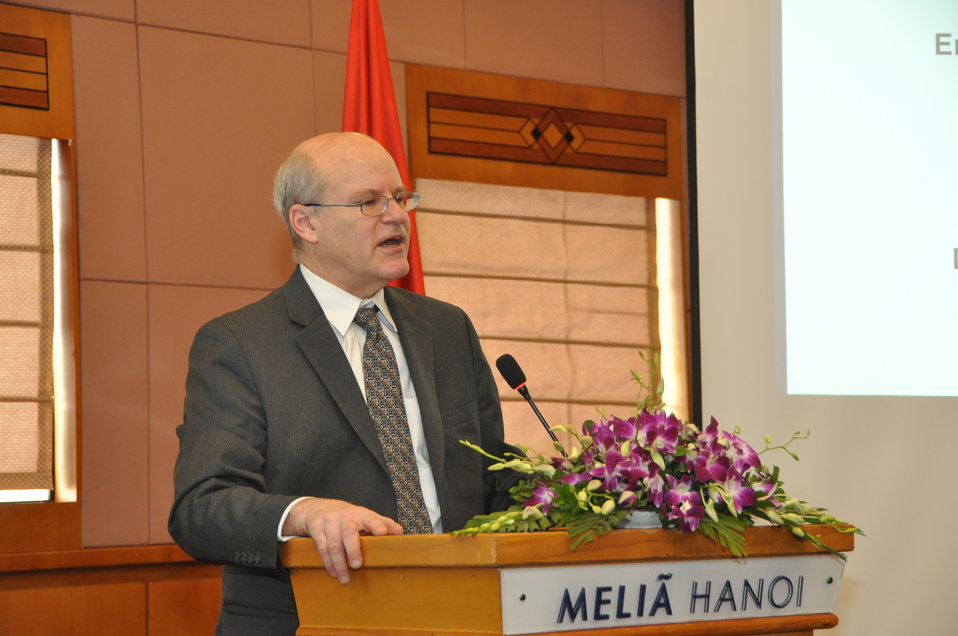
USAID Deputy Administrator Donald Steinberg addresses a workshop on the design for Agent Orange/dioxin clean-up at Danang Airport

USAID Deputy Administrator Donald Steinberg Visits Vietnam USAID Photo